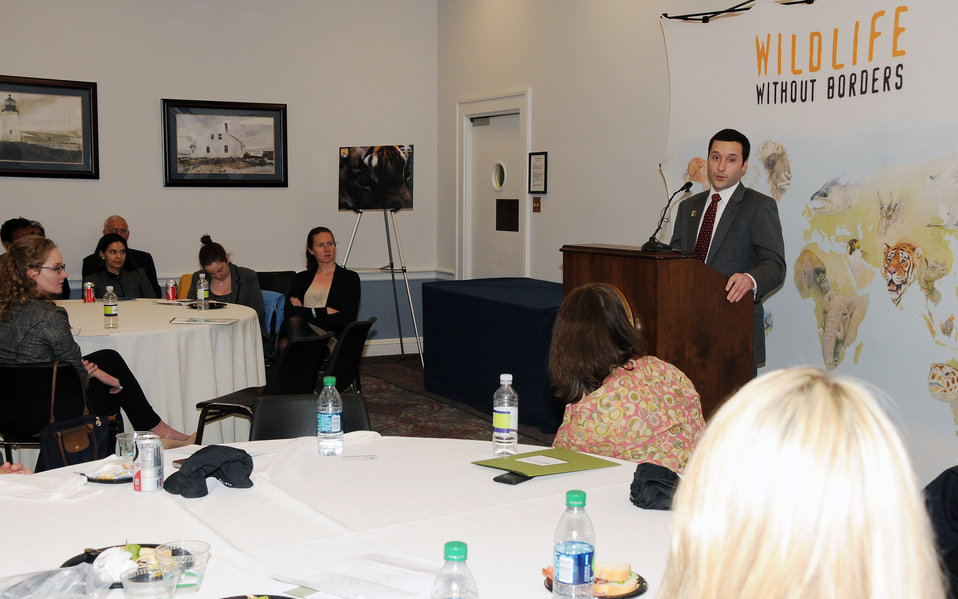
Save Vanishing Species on Capitol Hill

Austin Sherer - BBDO